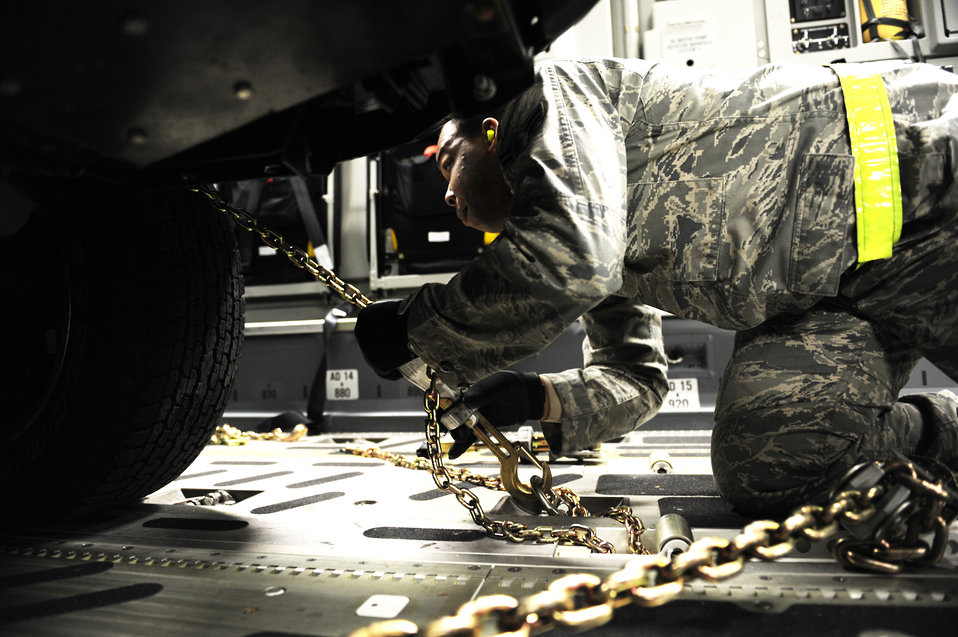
Haiti Relief Operations

Airmen load cargo onto a C-17 Globemaster III Jan. 14, 2010 at Joint Base McGuire-Dix-Lakehurst, N.J., supporting relief efforts to Haiti. The Airmen are assigned to the 621st Contingency Response Wing at JB McGuire.